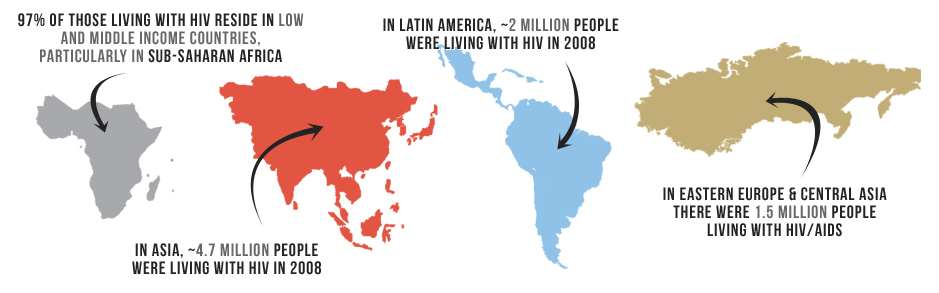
global statistics